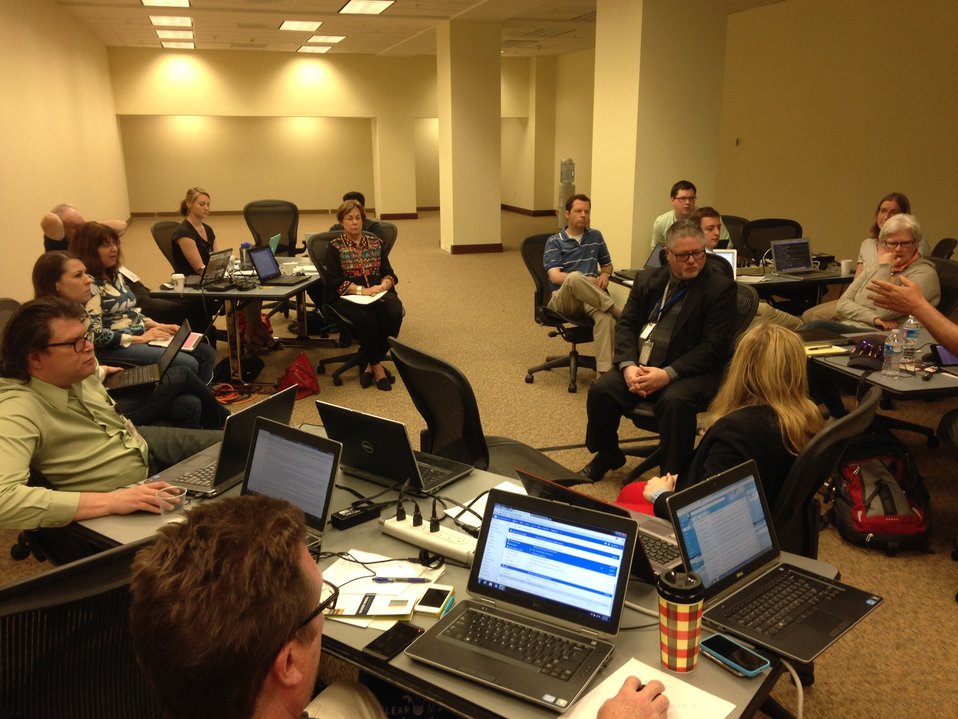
Office of the Federal Register Wikipedia Editathon Event; Location: Archives 1 - Innovation Hub, Washington, D.C.